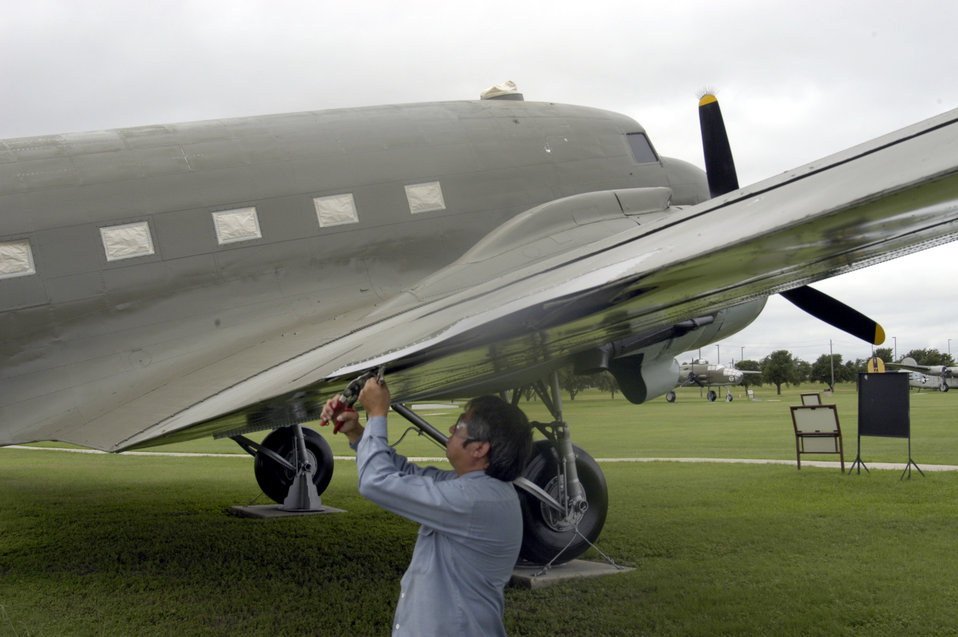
Preserving AF history

LACKLAND AIR FORCE BASE, Texas -- Miguel Basaldua removes buckled and corroded sheet metal on the wing of a C-47 Skytrain here. He is a contracted sheet-metal specialist who restores planes around the base.